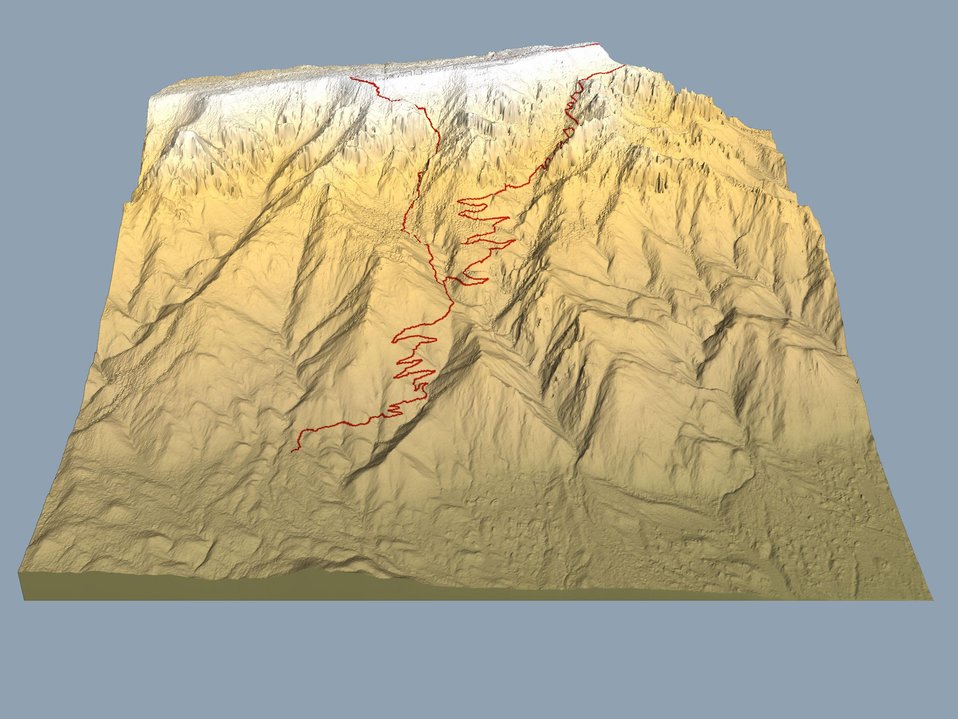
SAR IMAGE SHOWING THE WEST FACE OF THE SANDIA MOUNTAINS WHICH WAS MAPPED FOR A SEARCH AND RESCUE MISSION.

RADAR ORIGINALLY DEVELOPED FOR MILITARY SURVEILLANCE AND RECONNAISSANCE APPLICATIONS, RAPID TERRAIN VISUALIZATION (RTV) PRECISION MAPPING SYNTHETIC APERATURE RADAR (SAR) DATA WAS USED FOR THE FIRST TIME IN NOVEMBER, 2003, BY THE ALBUQUERQUE MOUNTAIN RESCUE COUNCIL TO FIND AND RESCUE A HIKER STRANDED AT DARK IN THE SANDIA MOUNTAINS IN NM. SAR EXPERTS AT SANDIA SAY THE SAME TECHNOLOGY COULD MAP OTHER MOUNTAINOUS TERRAIN AROUND THE COUNTRY AND BE USED IN SEARCH AND RESCUE MISSIONS.